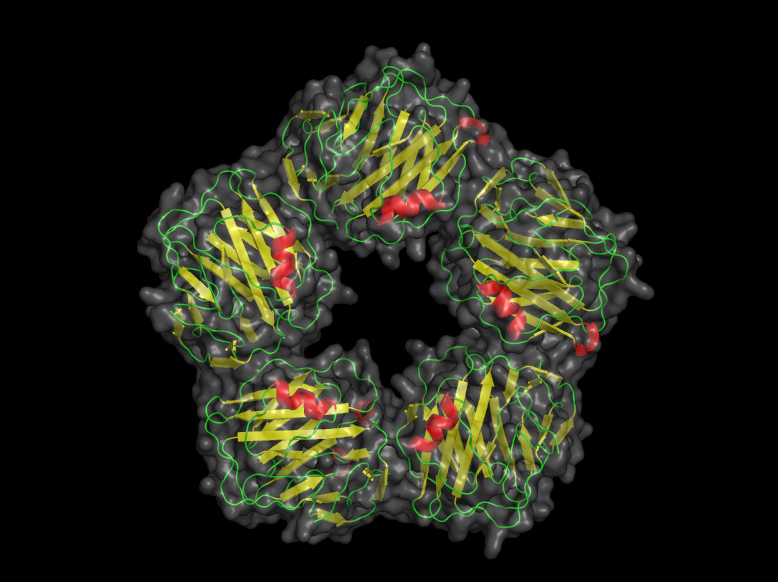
C-Reactive Protein

Computer-generated image of the structure for C-reactive protein.